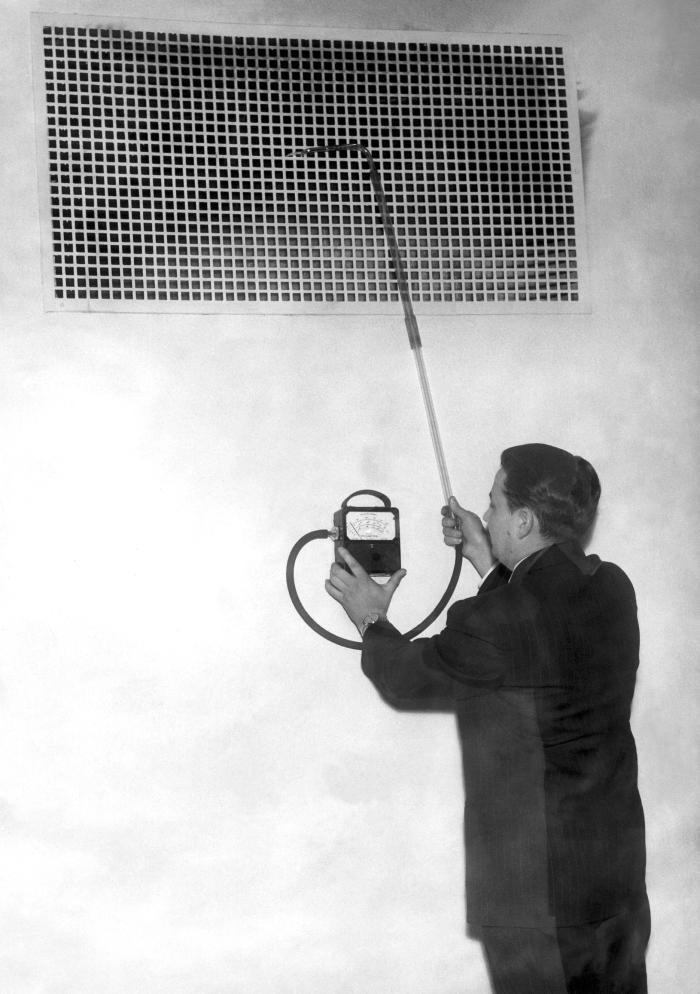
This historical photograph was provided by the Center for Disease Control's (CDC), National Institute for Occupational Safety and Health (NIOSH). Reprinted from the May, 1951, 'Industrial Hygiene Newsletter'. The image depicted a public health worker using an inexpensive airflow measuring device called a velometer. The meter had been fitted with a probe that allowed samples to be taken in isolated spaces such as the one shown in this image, from behind the grate (see PHIL 9490). . The device measured concentrations of pollutants in the air.